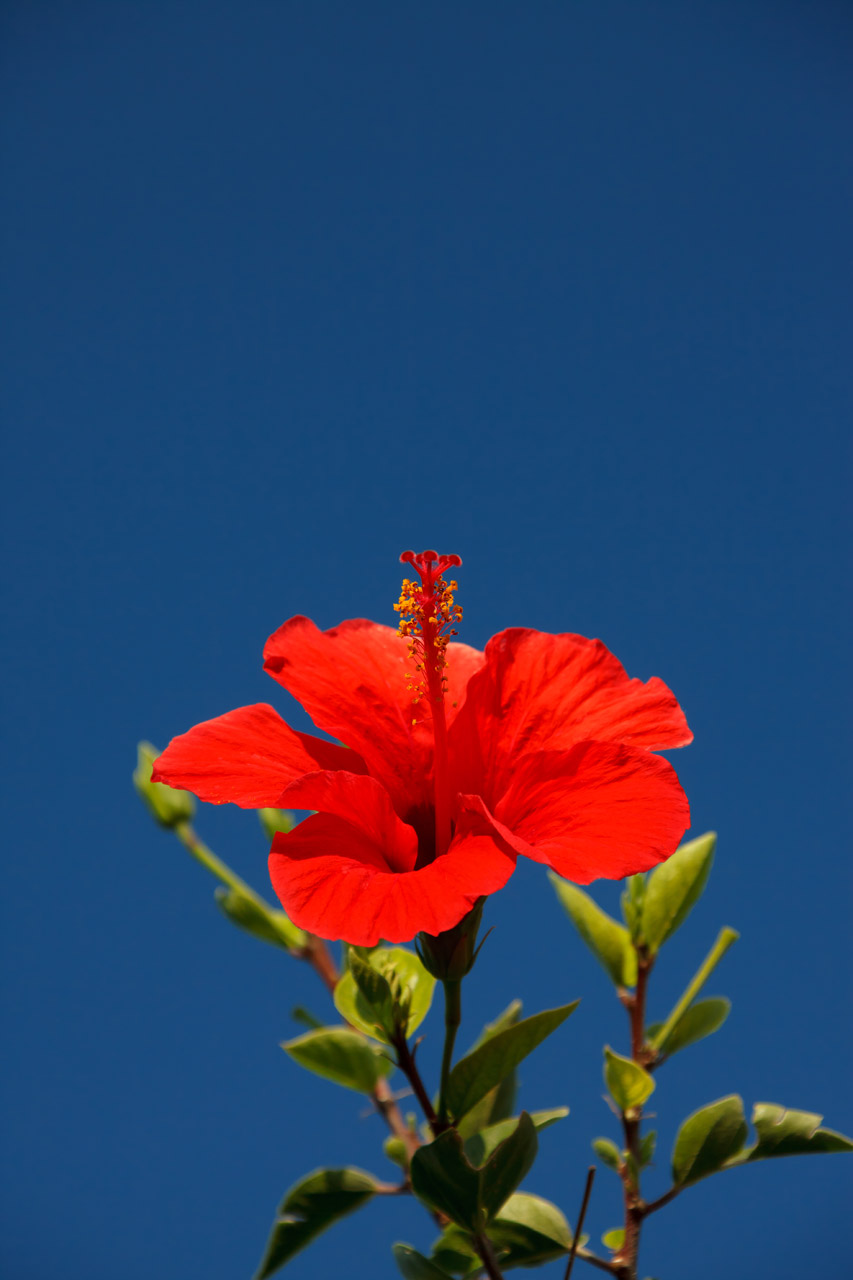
Red hibiscus flower against blue sky.